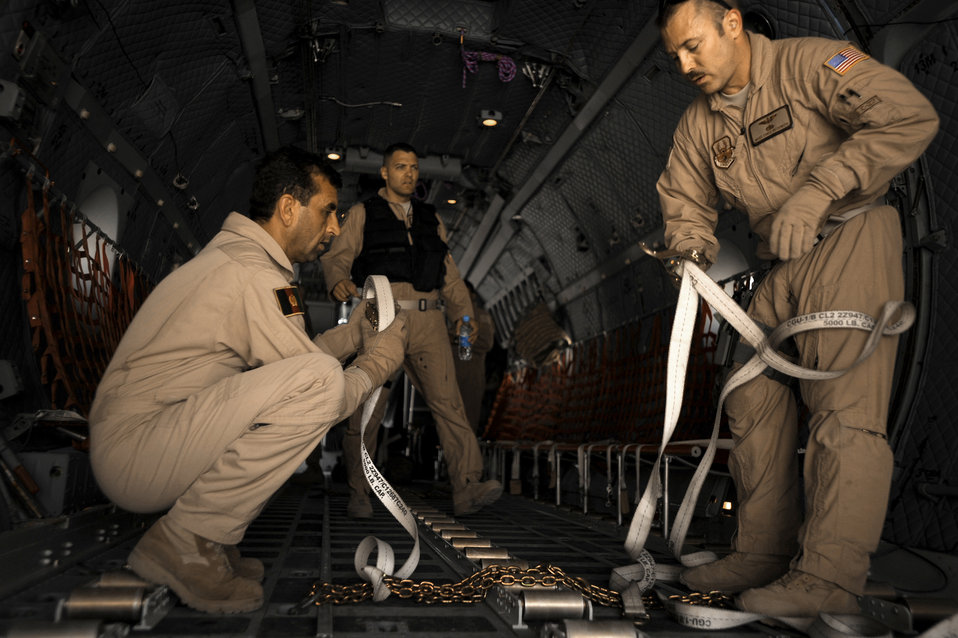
Operation Enduring Freedom

Afghan National Army Air Corps Sgt. Osman Sltamhmad and U.S. Air Force Master Sgt. Chris Beckwith put away loose cargo straps on a C-27 Spartan prior to the arrival of passengers May 15, 2010, at Kandahar Airfield, Afghanistan. Sergeant Sltamhmad is a C-27 loadmaster. Sergeant Beckwith is a C-27 loadmaster adviser assigned to the 538th Air Expeditionary Advisory Squadron.